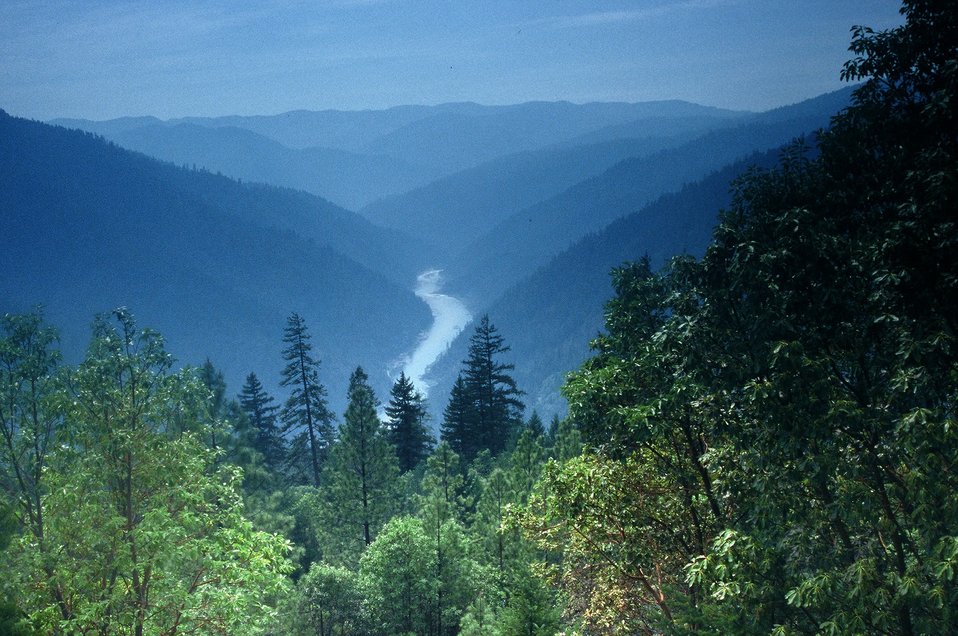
Wild section of the Rogue River from Grave Creek to Foster Bar May 19 to May 22.